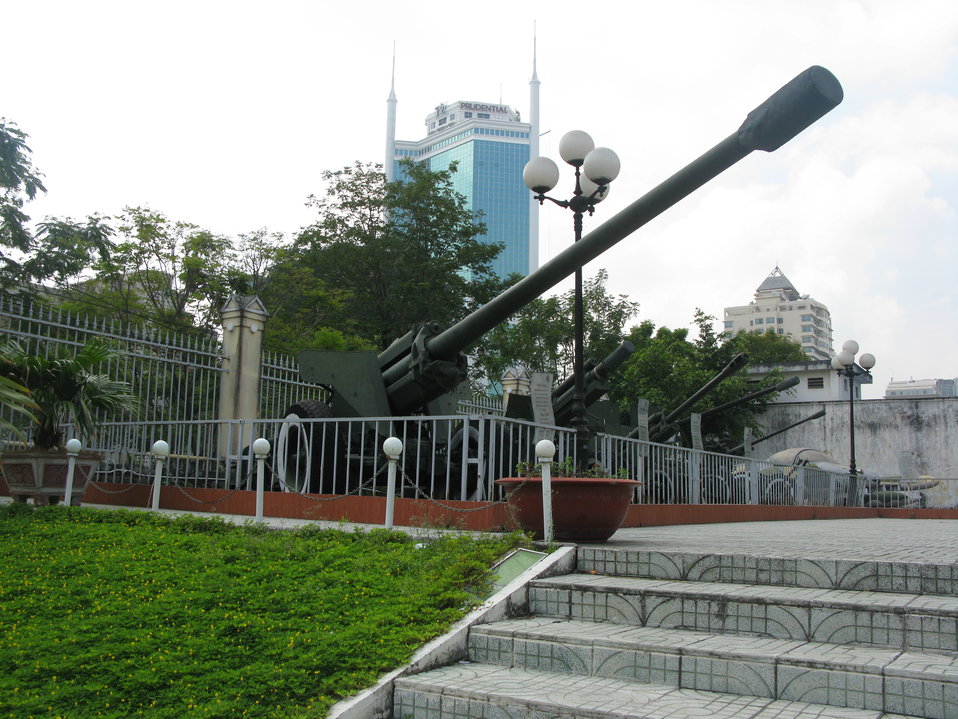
A 130 mm towed field gun M1954 (M-46) of Vietnam People's Army that was set up in Nhon Trach and used to attack Tan Son Nhat Airport during Ho Chi Minh Operation (25th - 30th April 1975). It is now shown in the Museum of Ho Chi Minh Operation. Tiếng Việt: Một trong những khẩu pháo 130mm đặt tại trận địa Nhân Trạch, bắn khống chế sân bay Tân Sơn Nhất từ ngày 25/4/1975 đến khi kết thúc chiến dịch Hồ Chí Minh. Hiện vật trưng bày tại Bảo tàng Chiến dịch Hồ Chí Minh, số 2 đường Lê Duẩn, thành phố Hồ Chí Minh.